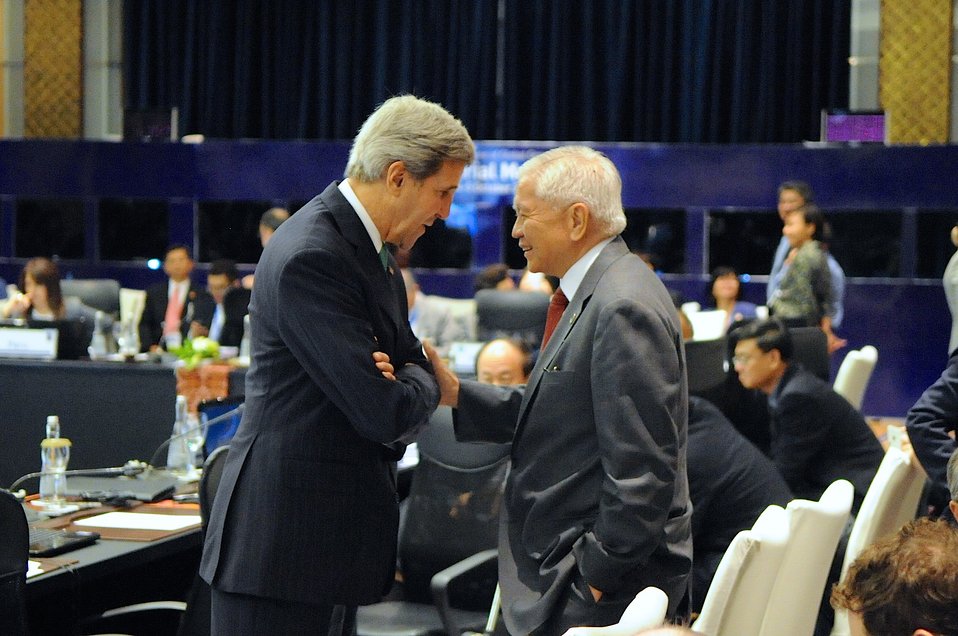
Secretary Kerry Speaks With Philippines Foreign Secretary del Rosario at the APEC Ministerial in Indonesia

U.S. Secretary of State John Kerry speaks with Philippines Foreign Secretary Albert del Rosario during a break at the APEC Ministerial meetings in Bali, Indonesia, on October 5, 2013.